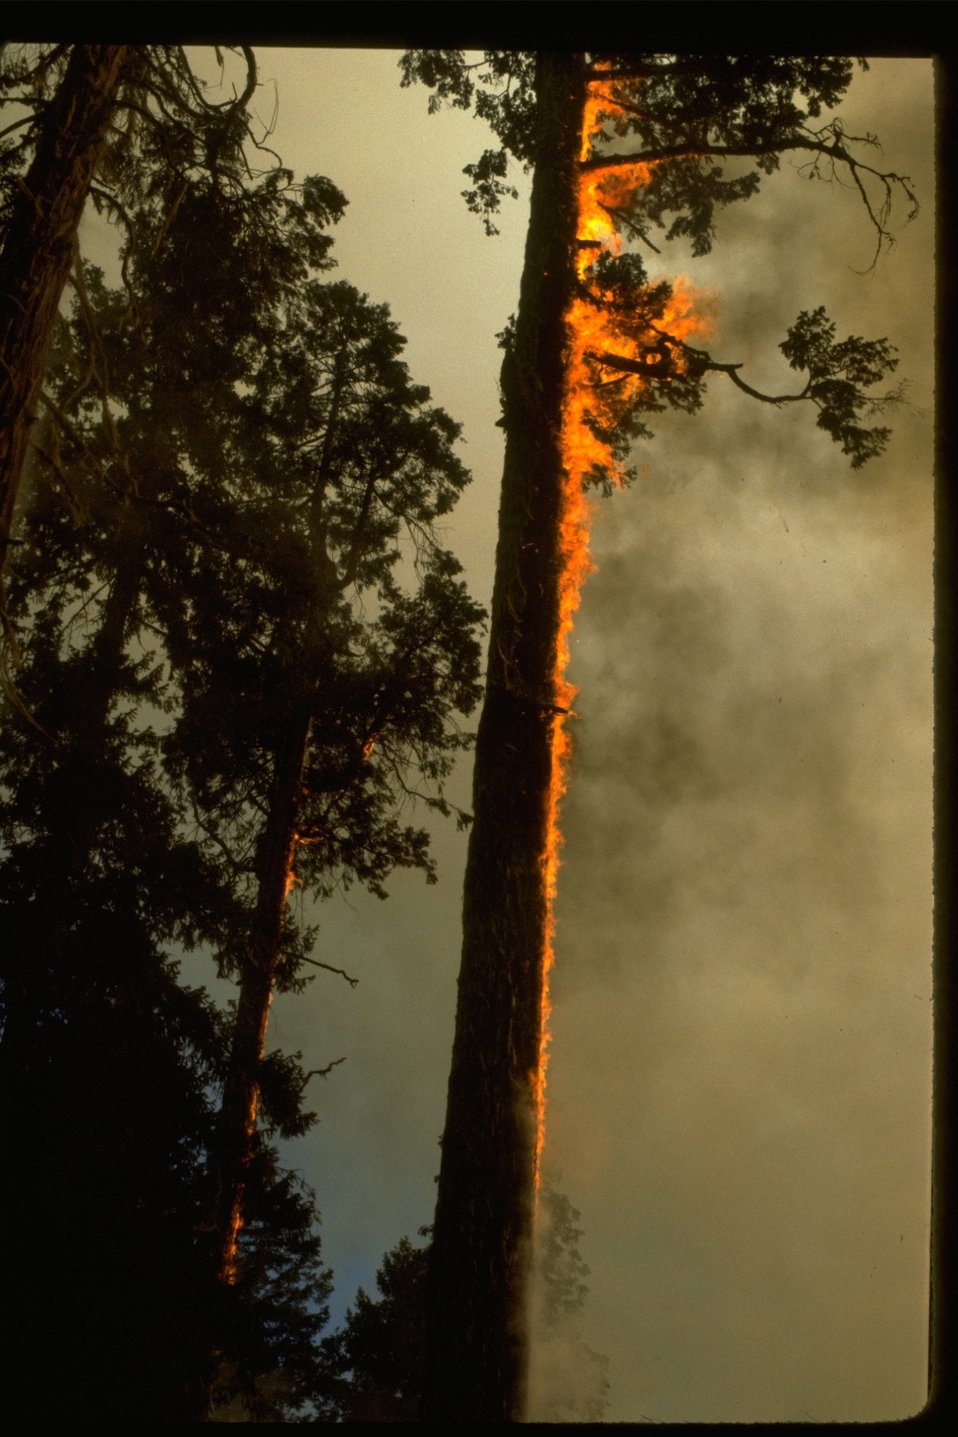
Fire burning up a tree.